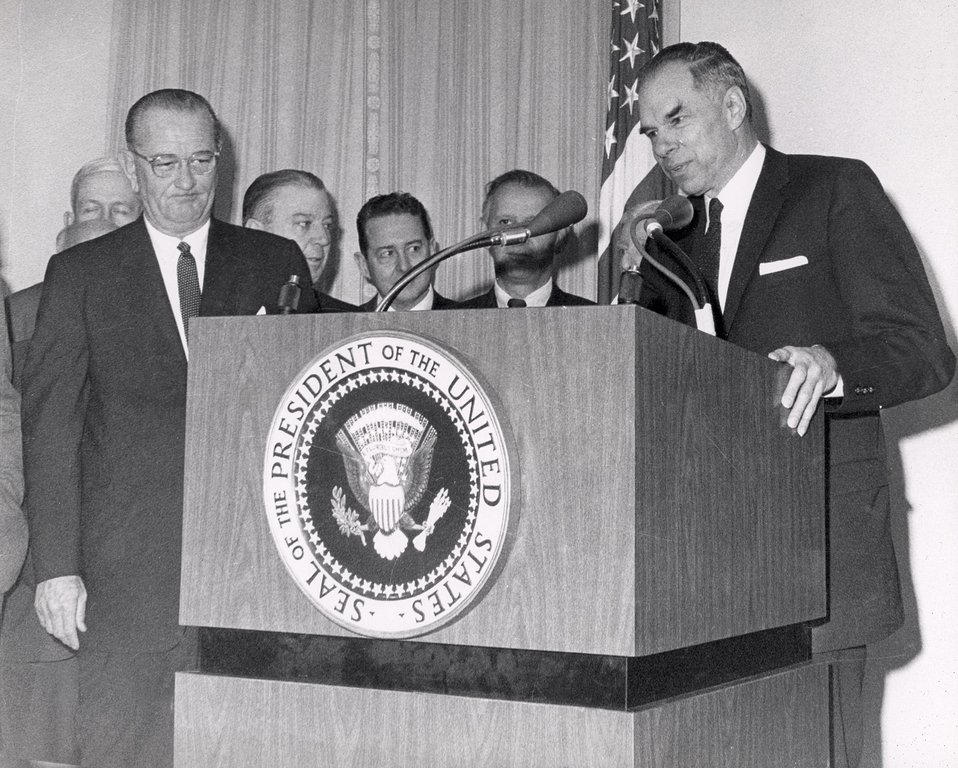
Fermi Award for Rickover in 1964.